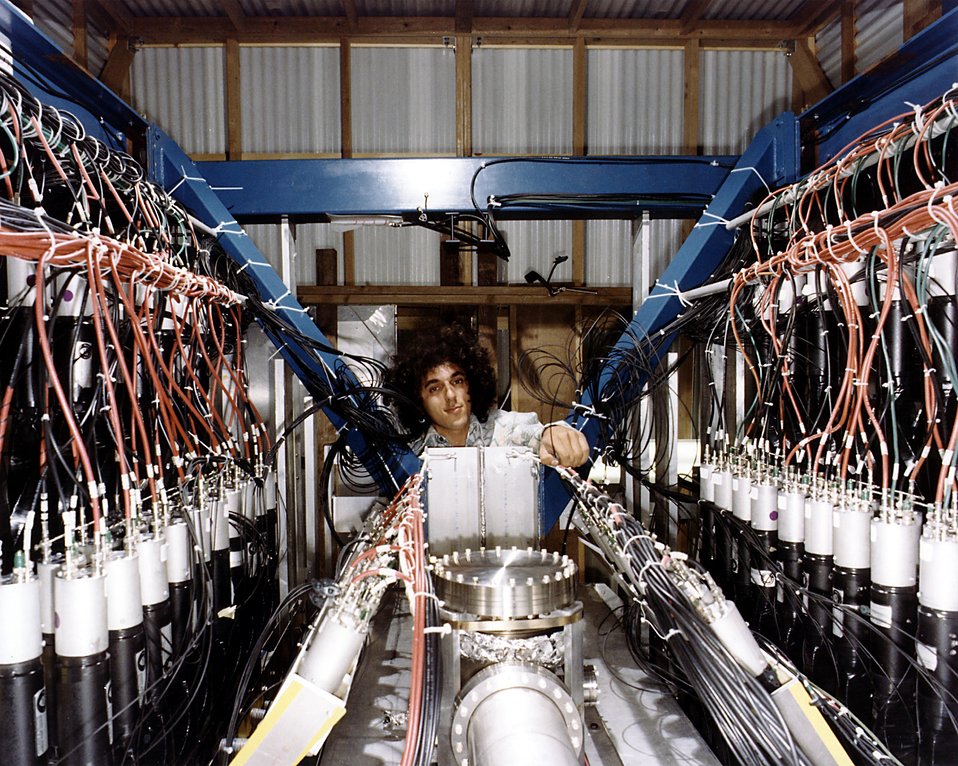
THE DETECTOR FOR THE FREE QUARK SEARCH WITH THE BEAM LINE PORT IN THE CENTER.

THE POSITRON-ELECTRON PROJECT (PEP) IS A JOINT UNDERTAKING OF STANFORD LINEAR ACCELERATOR CENTER (SLAC) AND THE LAWRENCE BERKELEY LABORATORY (LBL). THE PEP MACHINE IS DESIGNED TO STORE BEAMS OF ELECTRONS AND POSITRONS CIRCULA- TING IN OPPOSITE DIRECTIONS AT SINGLE-BEAM ENERGIES BETWEEN 4 GEV AND 18 GEV. THE SOURCE OF THE BEAMS WILL BE THE PRESENT SLAC ACCELERATOR. THE COUNTER-ROTATING BEAMS OF ELECTRONS AND POSITRONS WILL COLLIDE WITH EACH OTHER AT SIX POINTS IN THE MACHINE. THESE COLLISION OR BEAM-INTERACTION POINTS WILL BE USED FOR HIGH-ENERGY PHYSICS EXPERIMENTS.